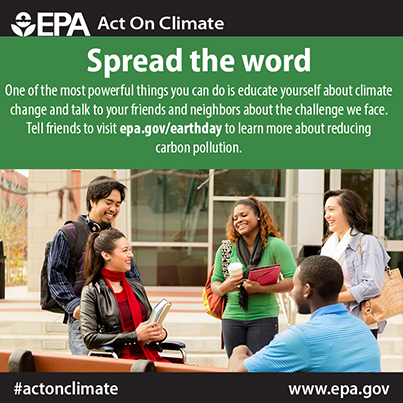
Spread the Word

Happy #Earth Day. Today, spread the word about the climate challenge we face to #ActOnClimate www.epa.gov/earthday/actonclimate/